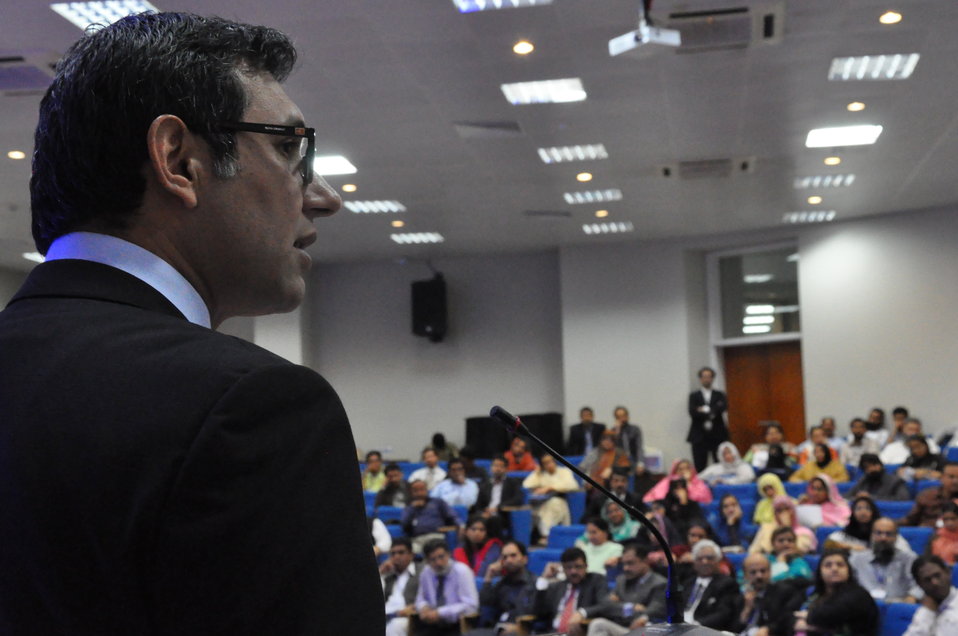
Senior Development Advisor Sajjad Moghal, USAID Lahore office, makes concluding remarks